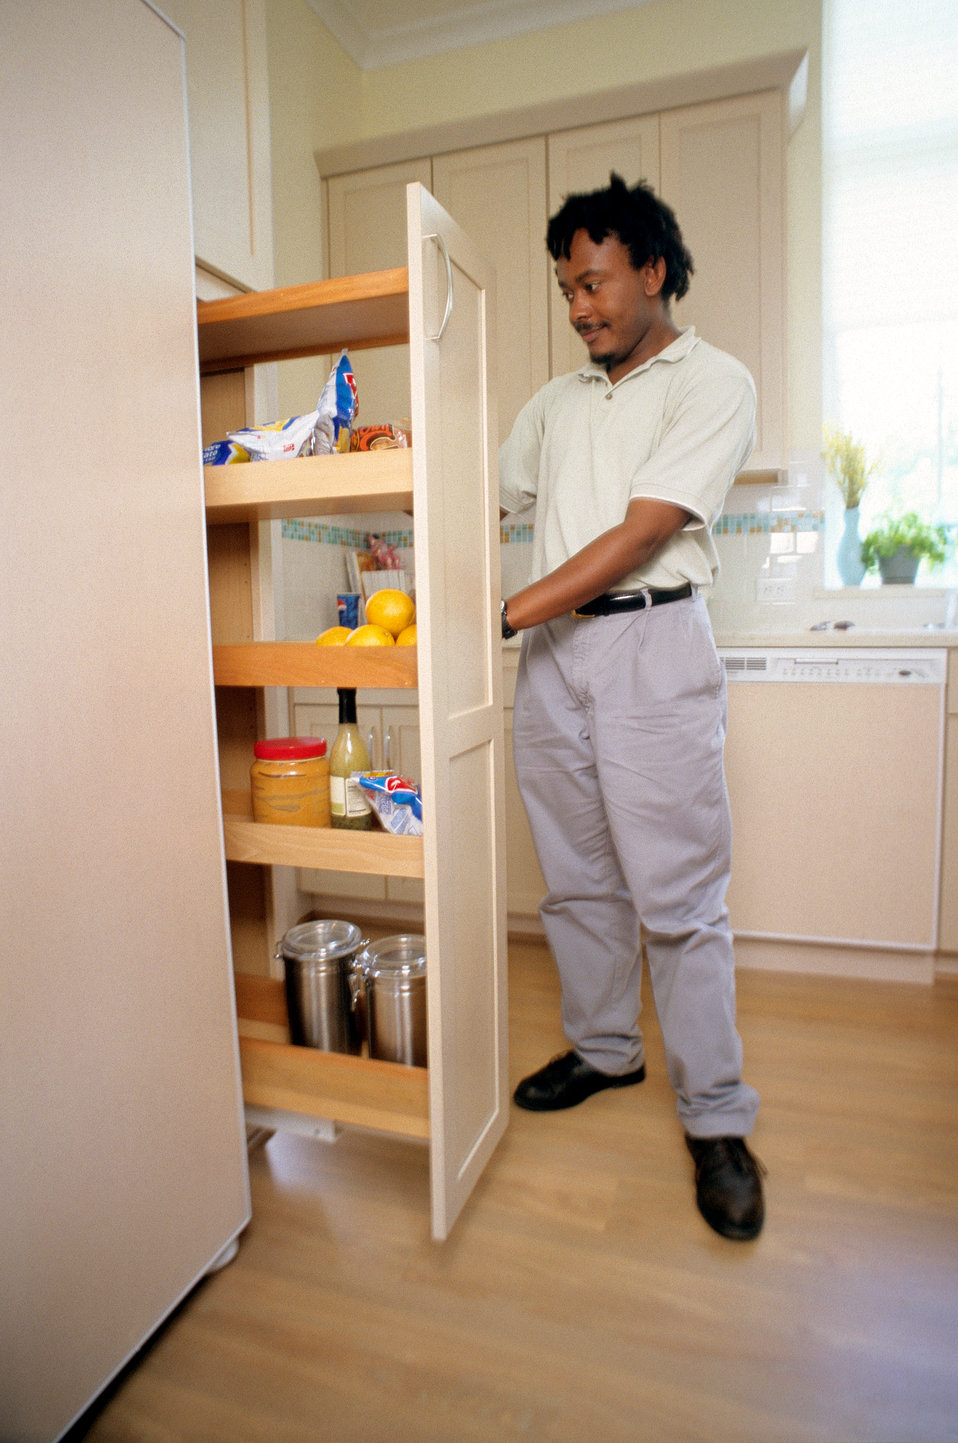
In this 2000 image, an adult man was shown as he was navigating the contents of a kitchen-situated 'pull-out' pantry, in order to illustrate how the installation had made kitchen tasks much easier for a wider range of users, whether they were handicapped, or unimpaired. Using pantry shelving, which could be pulled out toward the user, was easier for many, for it did not require awkward bending and reaching back into deep spaces, as is the case with many fixed-shelf closet pantries. In this three-image example (See PHIL 9309, and 9311), the entire cabinet rolled out to accommodate different reach-ranges, fincluding this standing adult man, an adult woman using a wheelchair, and several child siblings.'Part of the College of Design at North Carolina State University (NCSU), Raleigh, NC, the Center promotes the concept of universal design in all design, construction, and manufacturing disciplines through research, design assistance, and training.